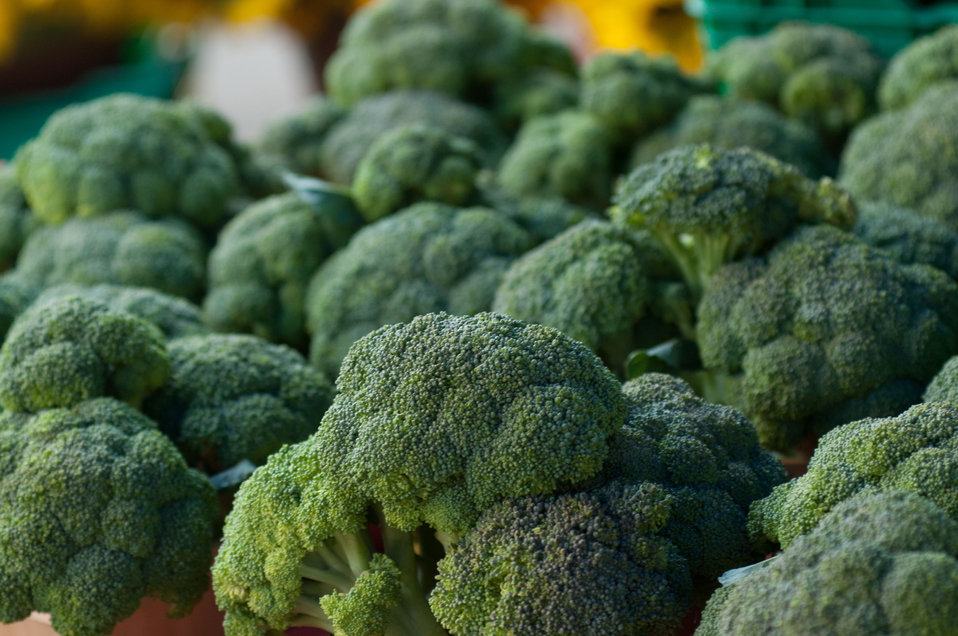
Worden Farm (www.wordenfarm.com) fresh picked organic broccoli are ready for sale at the Saturday Morning Market, in St. Petersburg, FL, on April 14, 2012. Worden Farm is a family farm that provides certified organic produce to Southwest Florida through community supported agriculture (CSA) membership programs and retail sale at several farmer’s (community) markets. Chris Worden, Ph.D. and Eva Worden, Ph.D. founded and operates the farm that employs more than 20 people. Growing certified organic crops in the coastal sandy soil has required them to develop innovative farming techniques which help the farm as well as assist the studies of universities and farm industry. There are several Worden Farm apprenticeships that provide hands-on training in all aspects of the farm, to include direct marketing at the Saturday Morning Market, or other market sites. The farm also holds culinary and gardening workshops, and other interactive educational events. One of their organic certifications is from the U.S. Department of Agriculture (USDA) and they have partnered with the USDA Natural Resources Conservation Service (NRCS) for soil conserving windbreaks and long tunnel structures to nurture seedlings and extend the growing season.